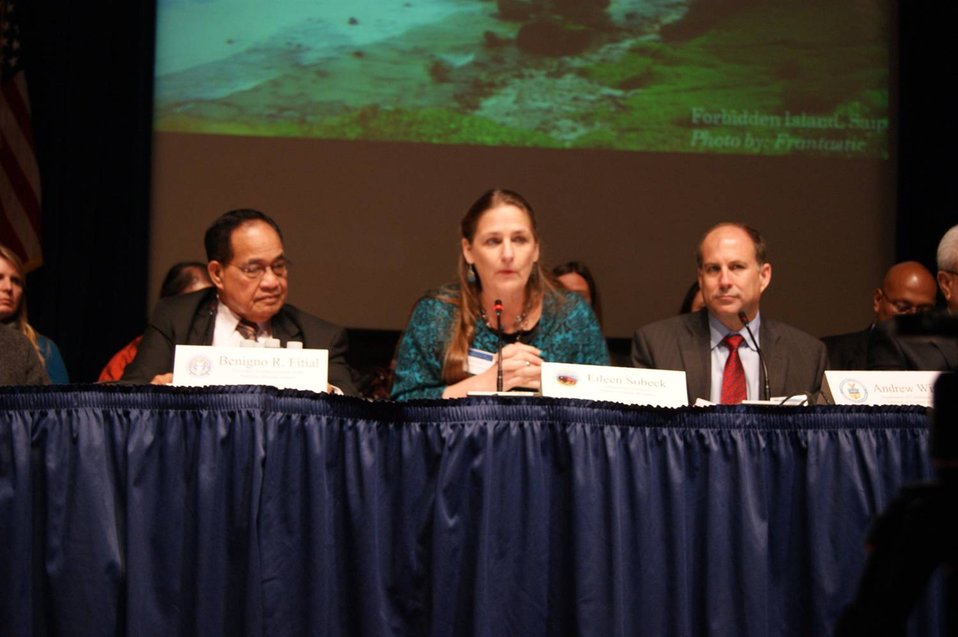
Coral Reef Task Force - Winter Meeting 2012